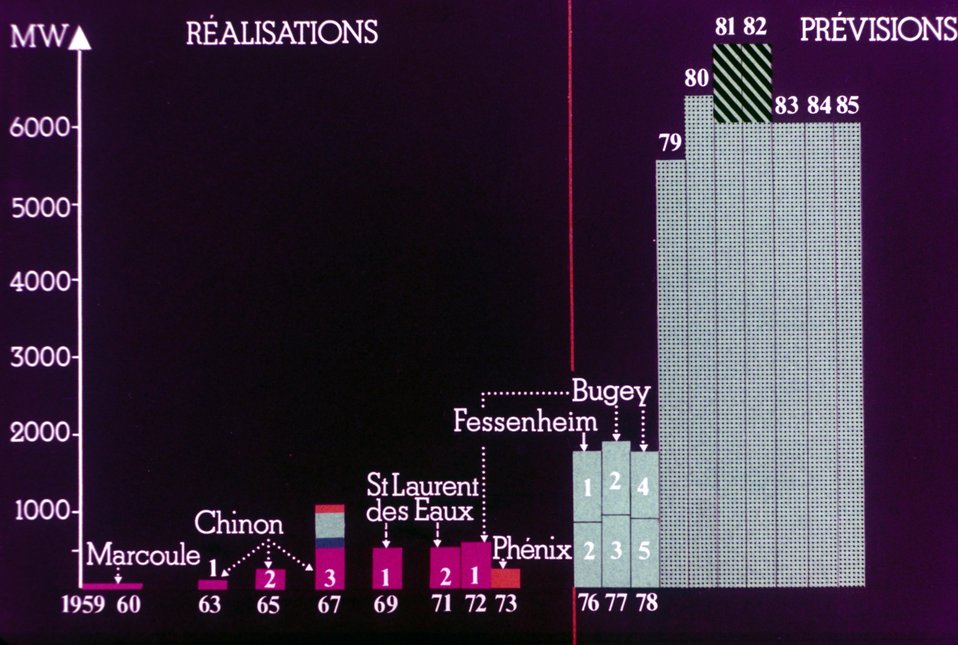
1959 -- 1985, le calendrier de l'Ðnergie nuclÐaire en France.